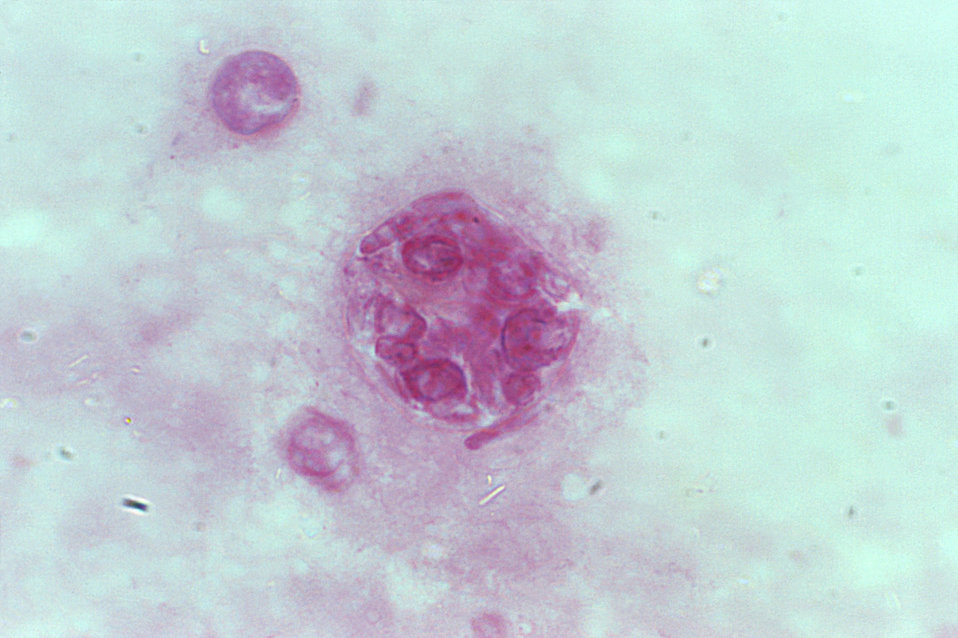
This photomicrograph revealed some of the histopathologic characteristics found within a pus specimen, which was prepared using periodic acid-Schiff (PAS), and which had been harvested from a skin lesion in a case of cutaneous coccidioidomycosis. In this particular specimen you'll note the chlamydospore, or mature spherule of a Coccidioides immitis fungal organism. As the reproductive structure of this, as well as other types of fungi, this spherule is also known as a chlamydoconidium, and contains the organism's endospores.